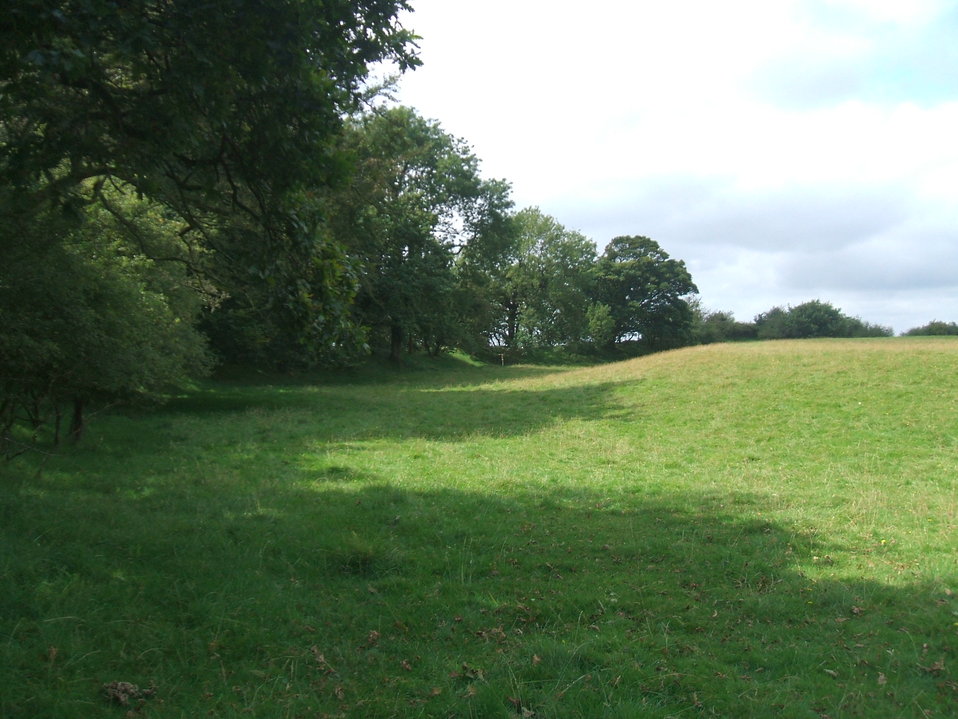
Cadbury Castle Southern inner earthwork (Right) and outer earthwork (Hedge line) from South East footpath entrance